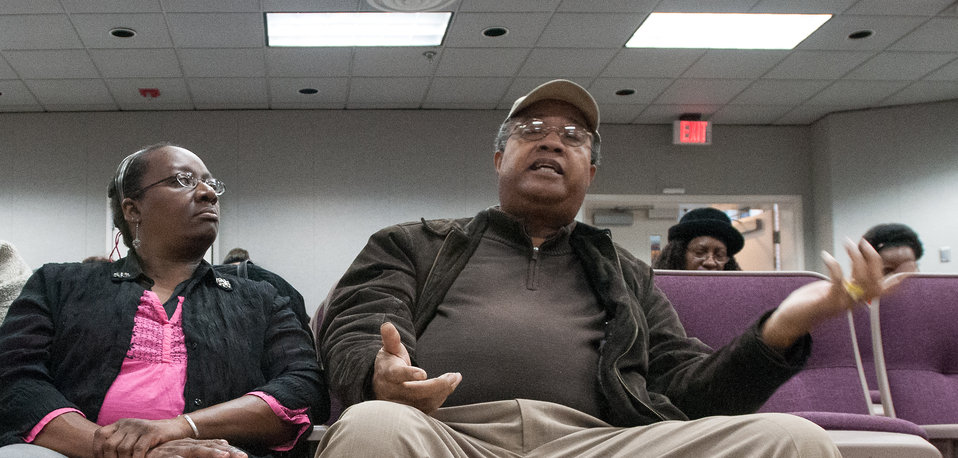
Farmers listened, questioned, took notes and gained a better understanding of resources available to them, at the “Virginia State University (VSU), U.S. Department of Agriculture (USDA) and Virginia Farmers Working Together” outreach workshop in the VSU, L. Douglas Wilder building on Thursday, March 7, 2013, in Petersburg, VA. Farmers shared and learned new ways to produce more and conduct better practices and planning of their family agriculture businesses.